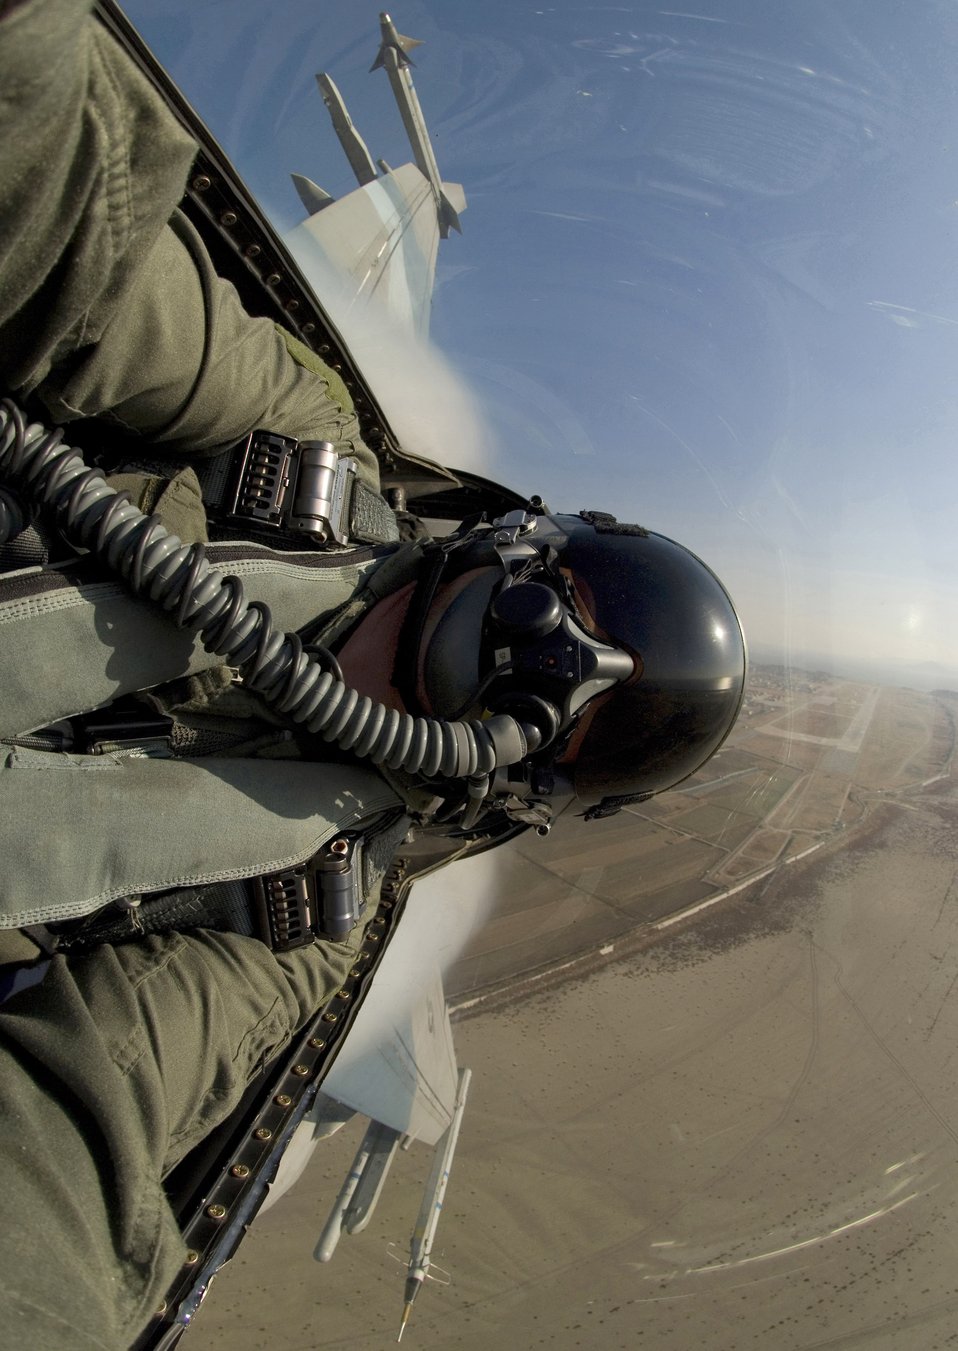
Close Air Support

An F-16 Fighting Falcon assigned to the 80th Fighter Squadron at Kunsan Air Base, South Korea, departs the base Nov. 29 for a close-air-support training mission. Pilots use such missions to simulate actual conditions they may face in combat and keep their war-fighting skills honed.